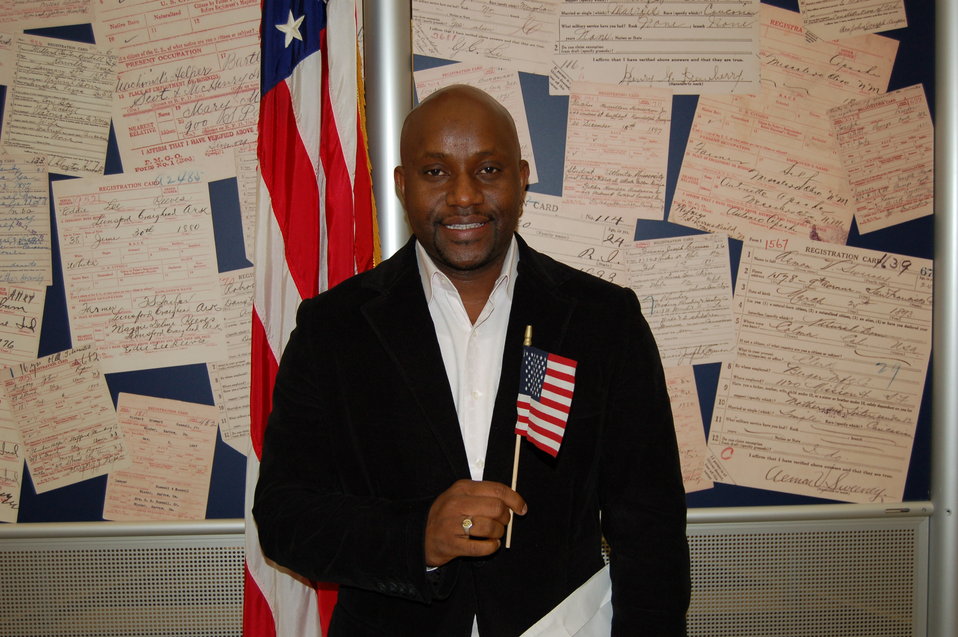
New Citizens